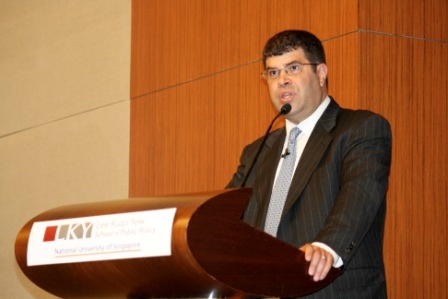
Deputy Secretary Wolin's Trip to the Pacific Rim

On Friday, May 20, 2011, Deputy Secretary Wolin was in Singapore to deliver remarks at a lecture organized by the NUS Lee Kuan Yew School of Public Policy on the United States’ longstanding commitment to welcoming investment from abroad.